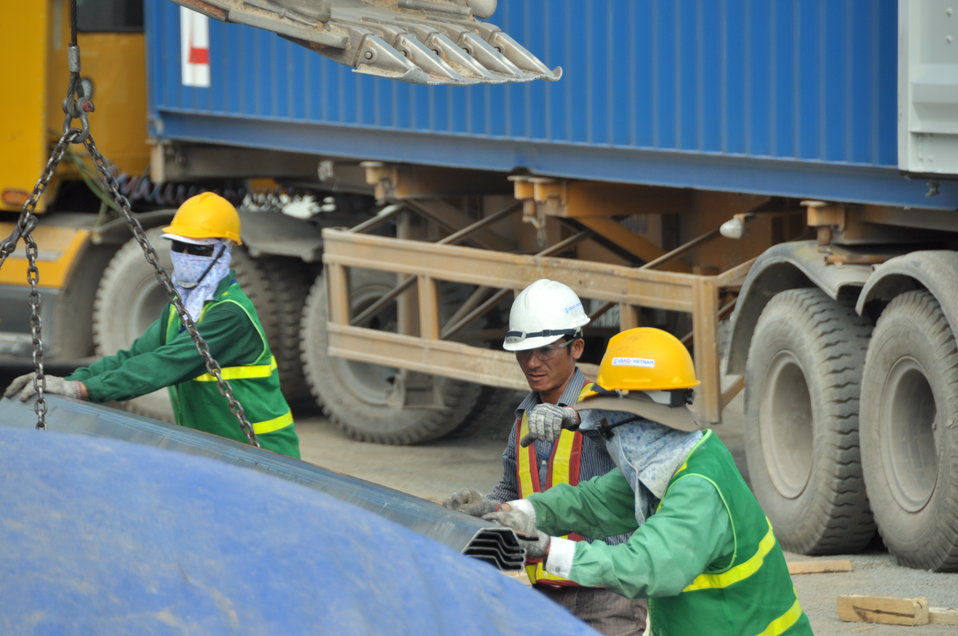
Site construction at the Environmental Remediation of Dioxin Contamination at Danang Airport

Progress at the Danang Airport remediation site
April 23, 2013